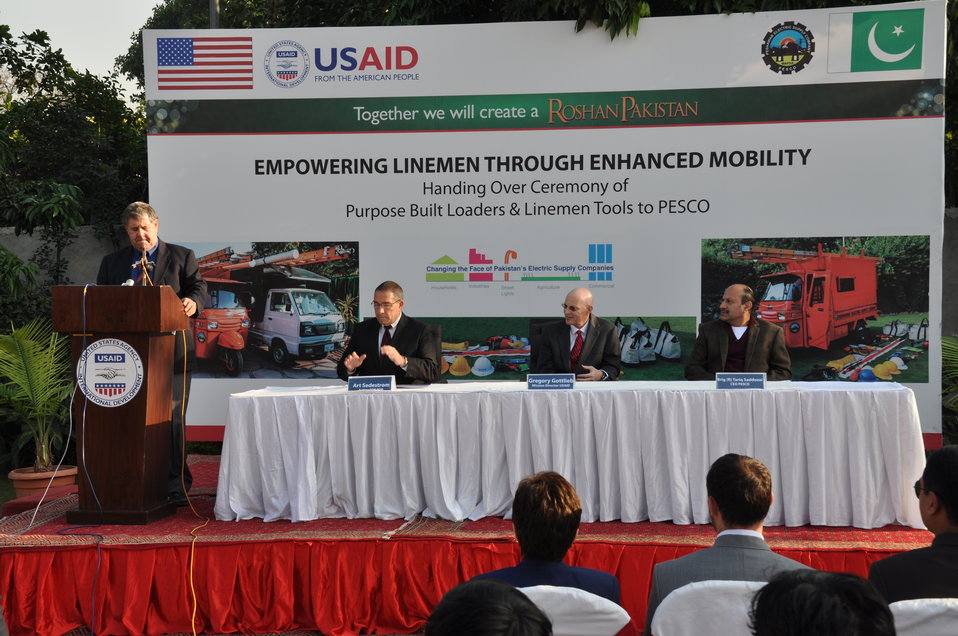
United States Government Strengthens PESCO Field Operations 17